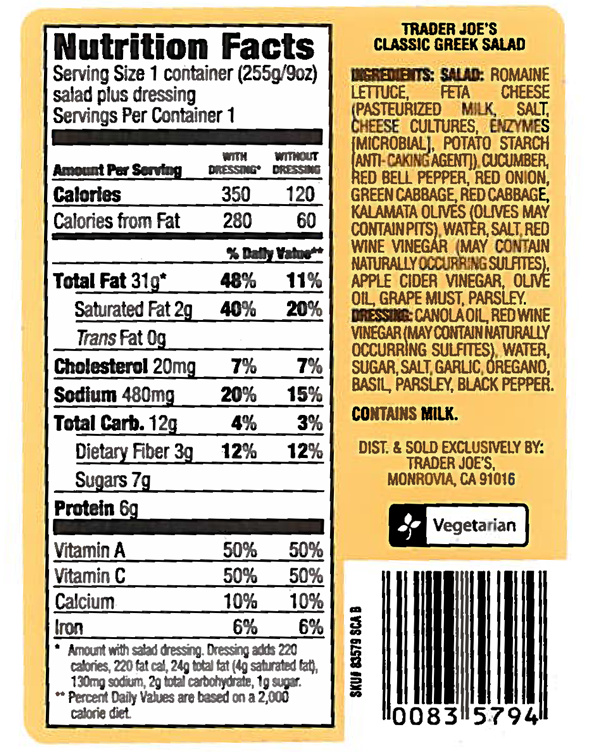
RECALLED – Southwest Salad

October 31, 2013 – World Class Distribution Issues Voluntary Allergy Alert On Undeclared Soy In Southwest Salad.